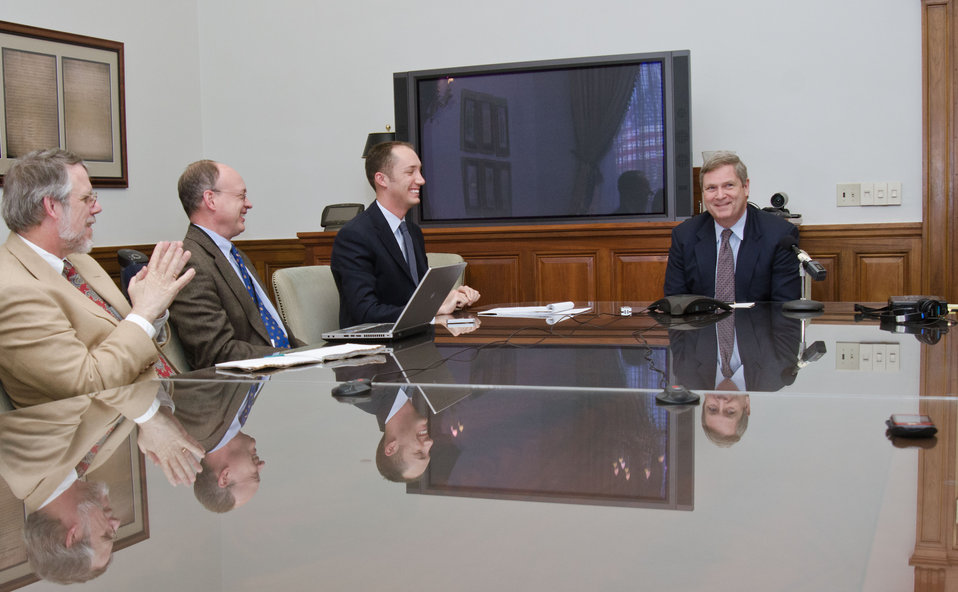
Agriculture Secretary Tom Vilsack briefed in-house reporters and held a media conference call to review the Agriculture FY2013 budget in Washington, D.C. on Monday, February 13, 2012.